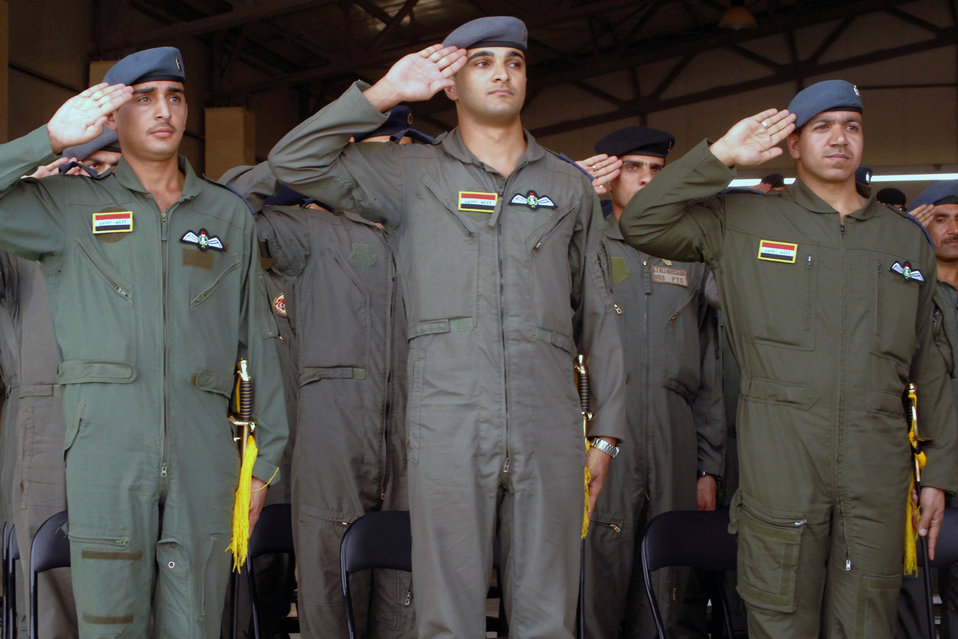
Ready to serve!

Iraqi air force 2nd Lieutenants Habeeb, Majid and Hassan salute during the Iraqi national anthem at their graduation ceremony from Iraq's fixed-wing flight training school at Kirkuk Regional Air Base, Iraq.